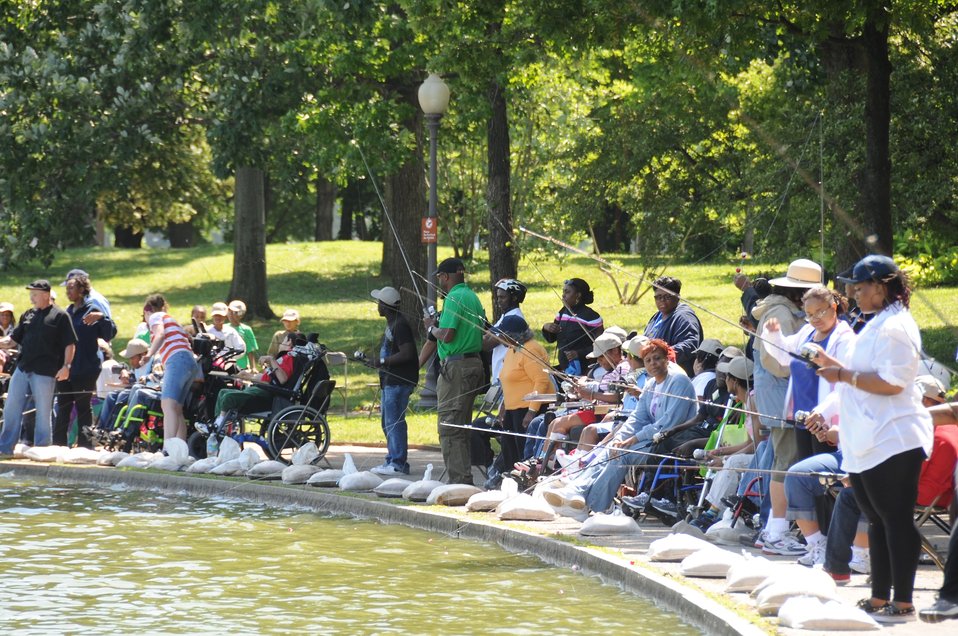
Casting lines

Hundreds of children came to enjoy mild weather and good fishing.